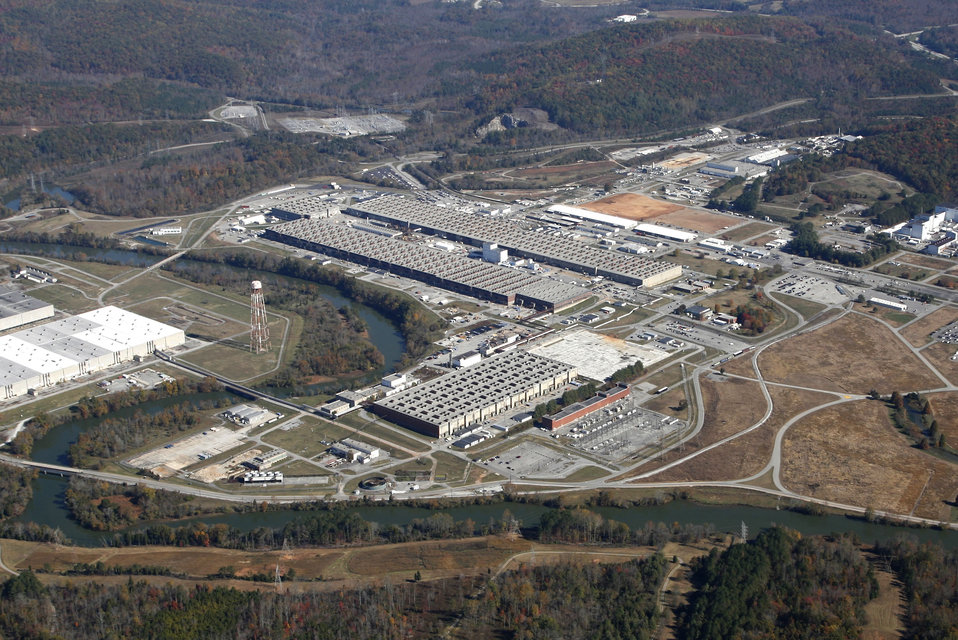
An aerial view of Oak Ridge’s East Tennessee Technology Park in 2006. The site, which dates back to the Manhattan Project, is a now a major cleanup area for the Office of Environmental Management.